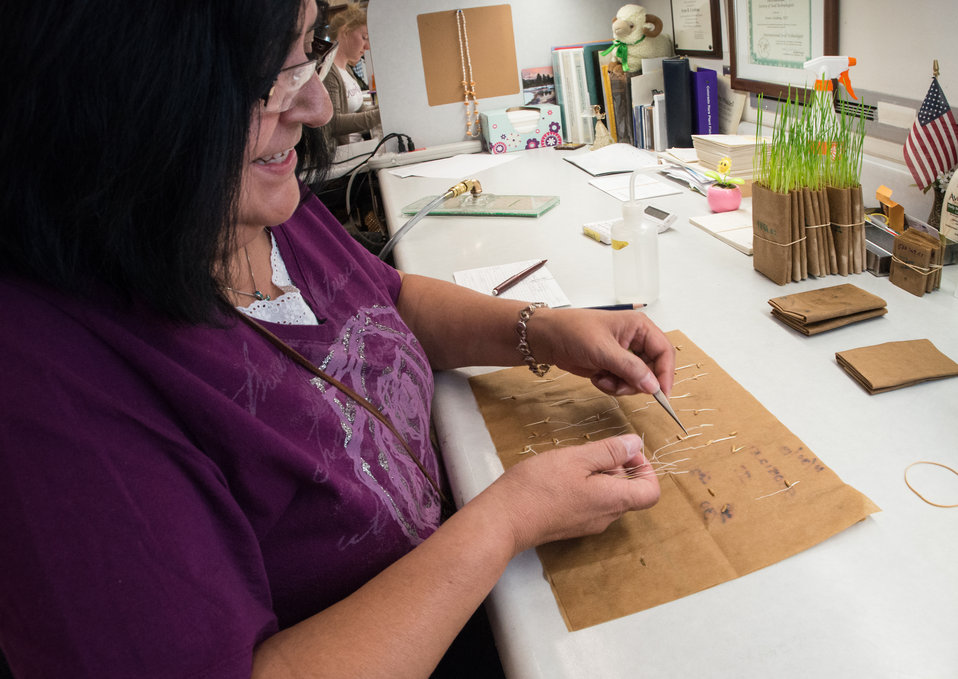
U.S. Department of Agriculture's (USDA) Agriculture Research Service (ARS) National Center for Genetic Resources Preservation (NCGRP) Irene Cardona performs a seed quality evaluation in the germination bay of the NCGRP, in Ft. Collins, CO on Wednesday, Nov. 6, 2013.